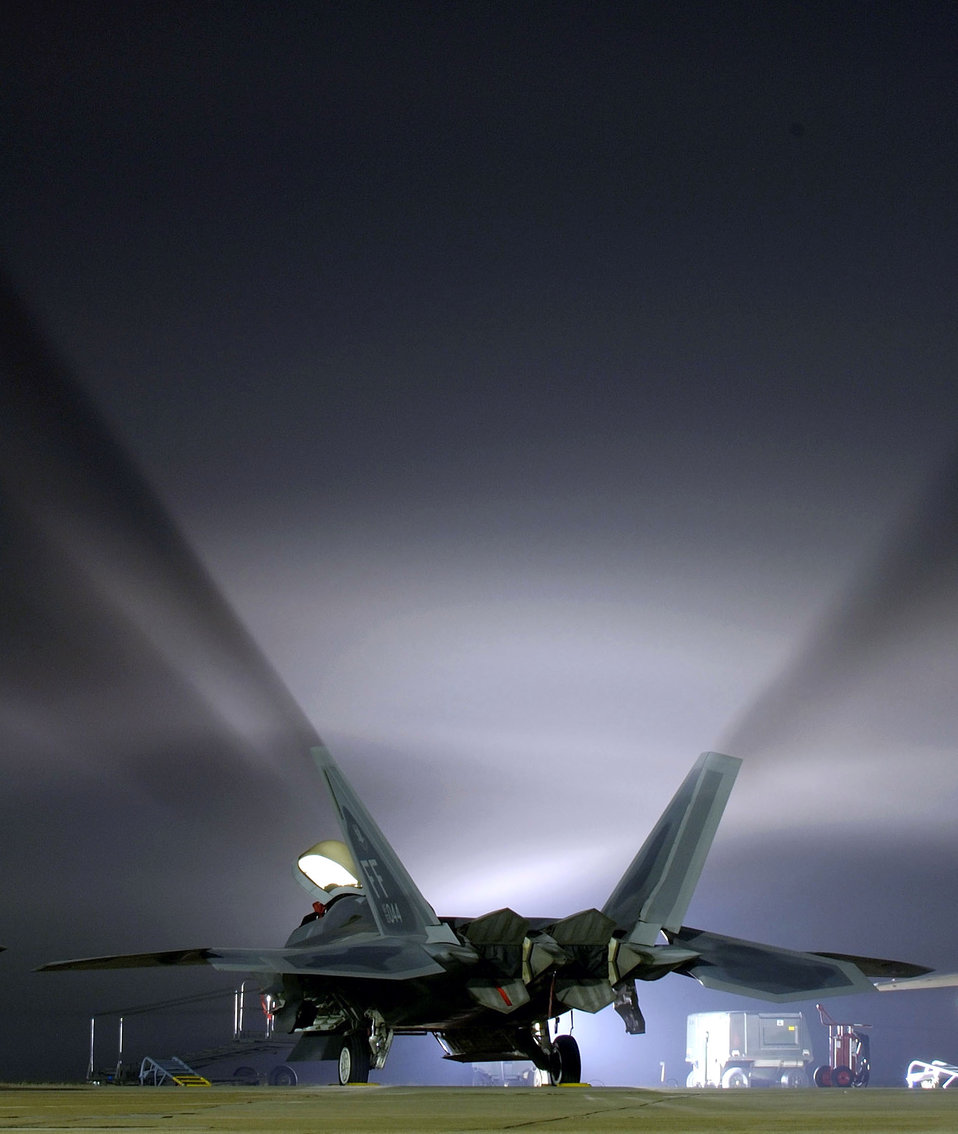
Waiting for action

LANGLEY AIR FORCE BASE, Va. -- An F-22A Raptor sits on the flightline during a Phase 1 exercise here Jan. 31. The operational readiness evaluation evaluates the 1st Fighter Wing's ability to prepare and deploy personnel, equipment and support assets to a combat environment.